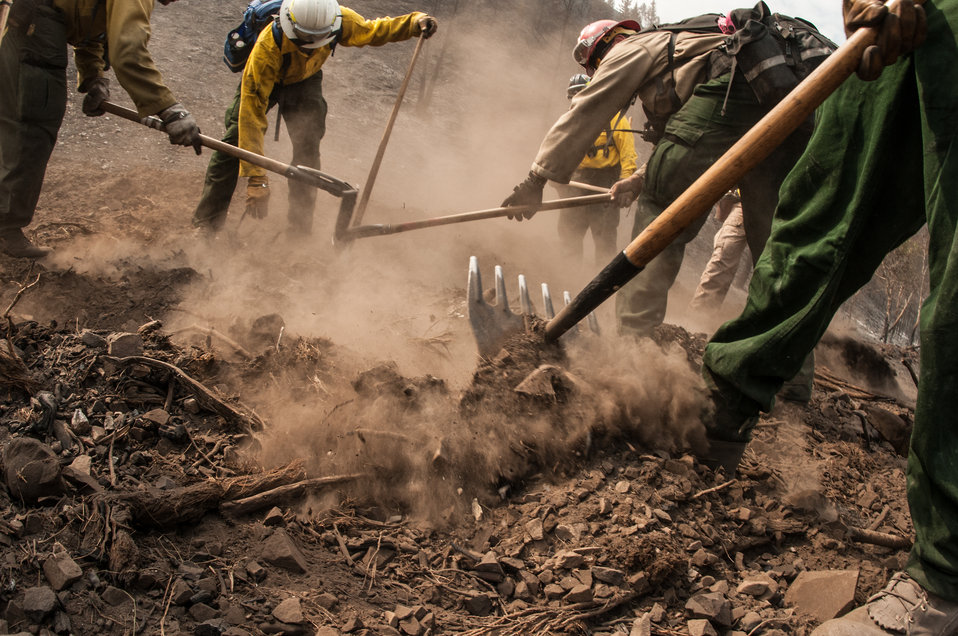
Southern Plains and Comanche Type 2 Initial Attack Crews and an Engine Crew work together to extinguish underground smoldering fires in roots or buried tree limbs, using a variety of hand tools and fire suppressing foam, during the Beaver Creek Fire, west of Hailey, ID, on Wednesday, Aug 21, 2013.